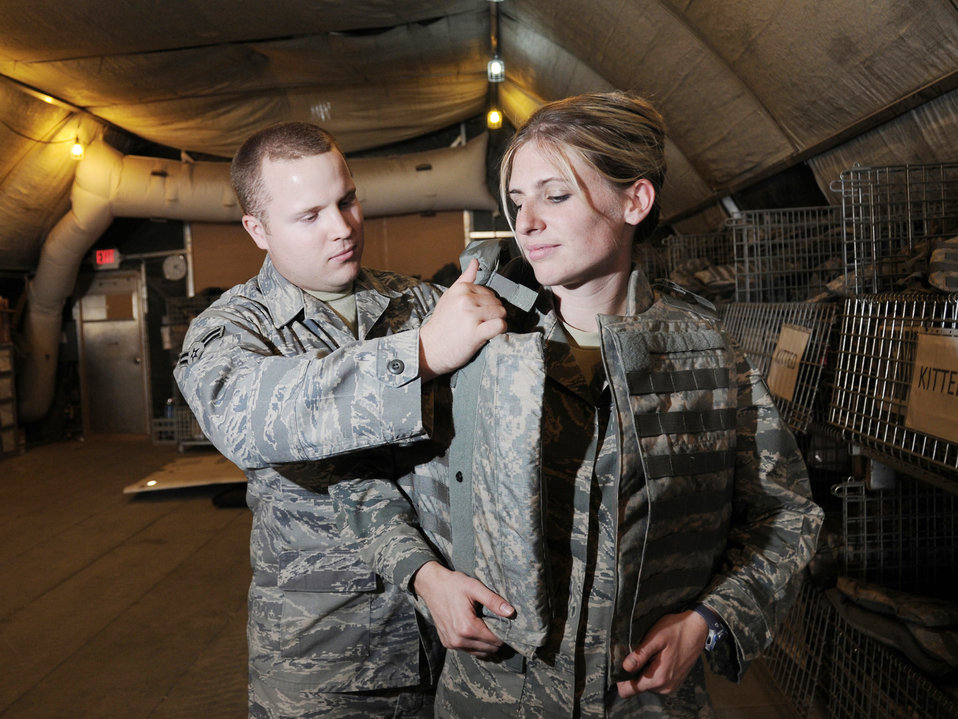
Distribution hub saves lives, money, extra luggage

Airman 1st Class Brandon Williams assists Staff Sgt. Jill Jakes with fitting her individual body armor at the expeditionary theater distribution center issue tent Oct. 1, 2009 in Southwest Asia. The ETDC issue tent issues mobility equipment to deployed personnel throughout the AOR. Airman Williams, a 379th Expeditionary Logistics Readiness Squadron mobility technician is deployed from Ellsworth AFB, S.D. Sergeant Jakes, a 379 ELRS Desert Depot technician, is deployed from the New York Air National Guard.